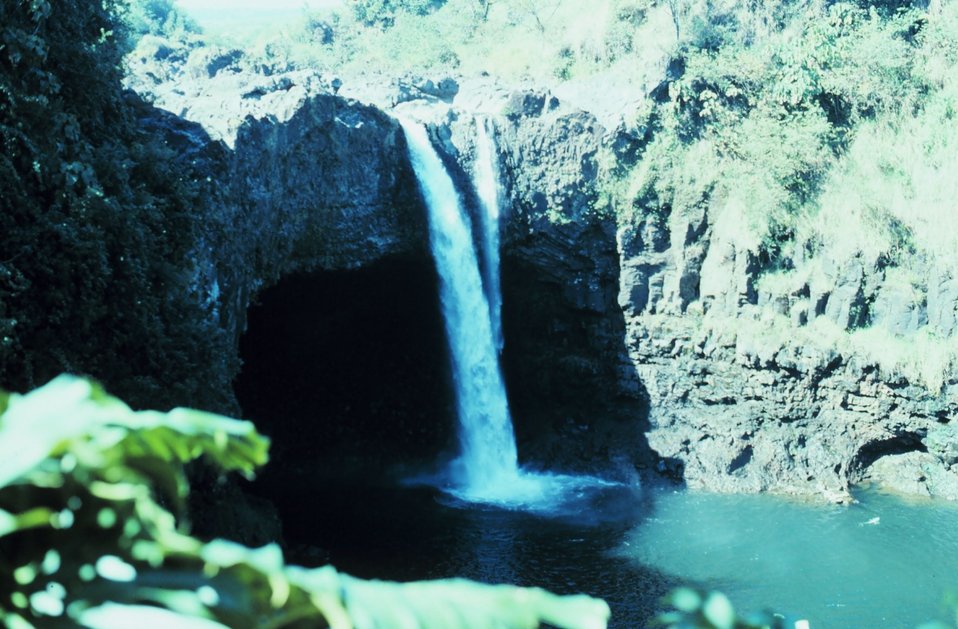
Rainbow Falls in Hilo